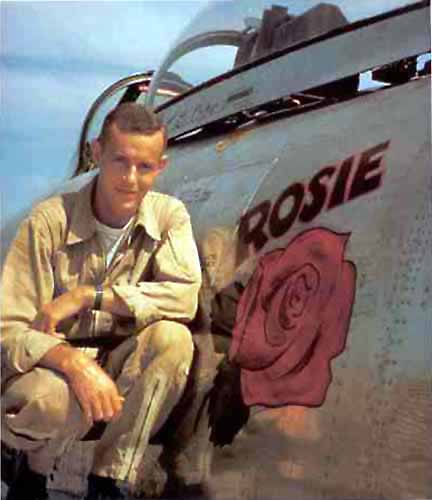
Family finally gets official word on Korean War vet's fate

SOUTH KOREA -- Capt. Troy Cope poses on the wing of his F-86 Sabre some time before the September 1952 Korean War mission on which he disappeared. His wife's name, "Rosie," is painted on the side.